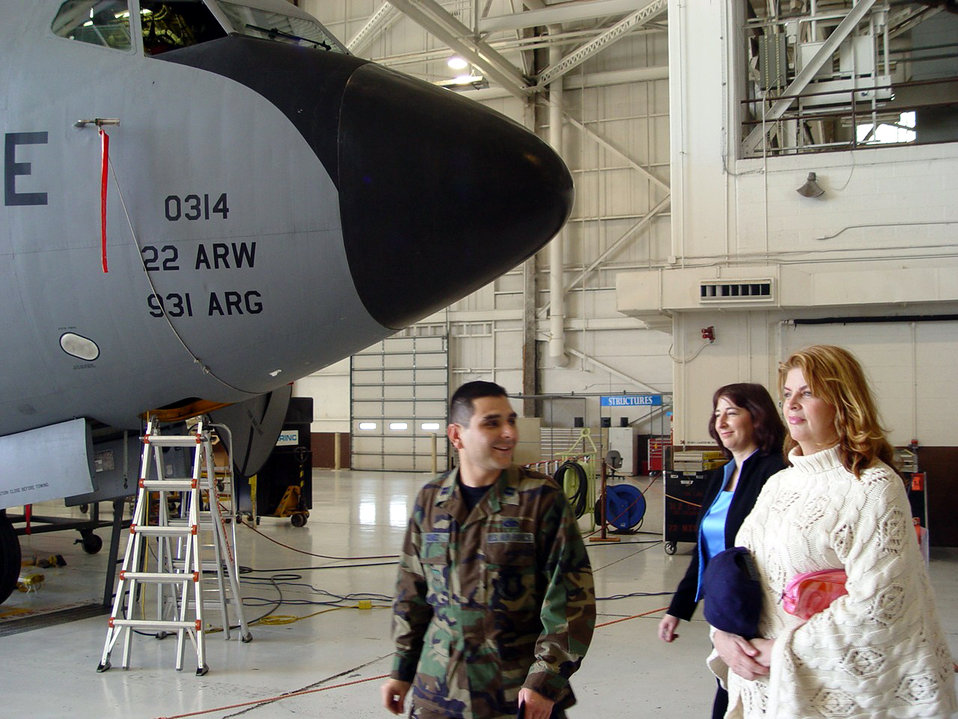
Kirstie Alley 'cheers' for McConnell

MCCONNELL AIR FORCE BASE, Kan. -- Capt. Robert Gomez gives Golden Globe-winning actress Kirstie Alley a tour of the KC-135 Stratotanker maintenance hangar. Ms. Alley visited here March 8 to show her support for the troops. Captain Gomez is assigned to the 22nd Maintenance Squadron here.